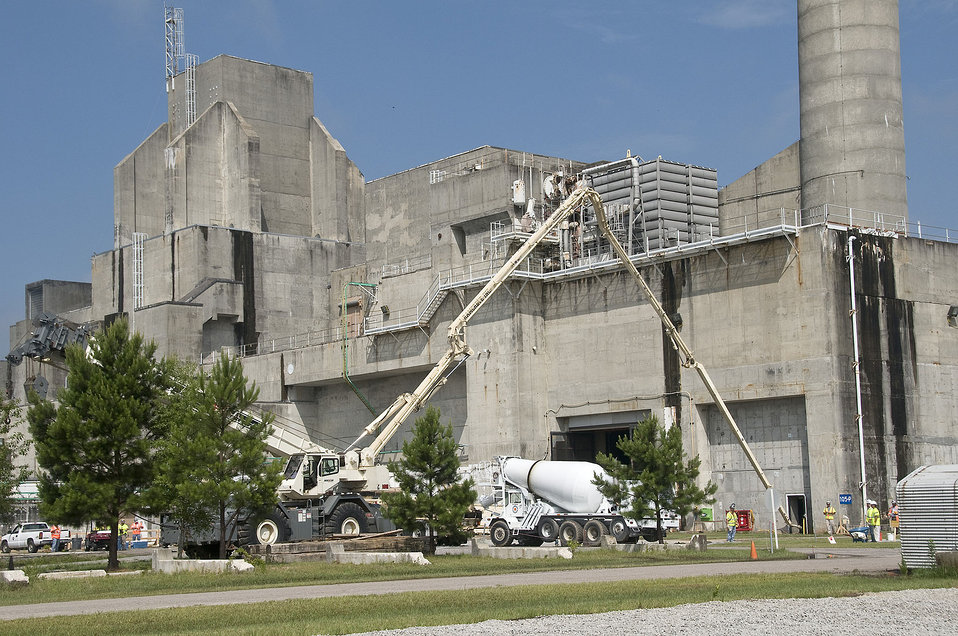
P Area grouting

Grout is a cement-like mixture used in decommissioning reactors.